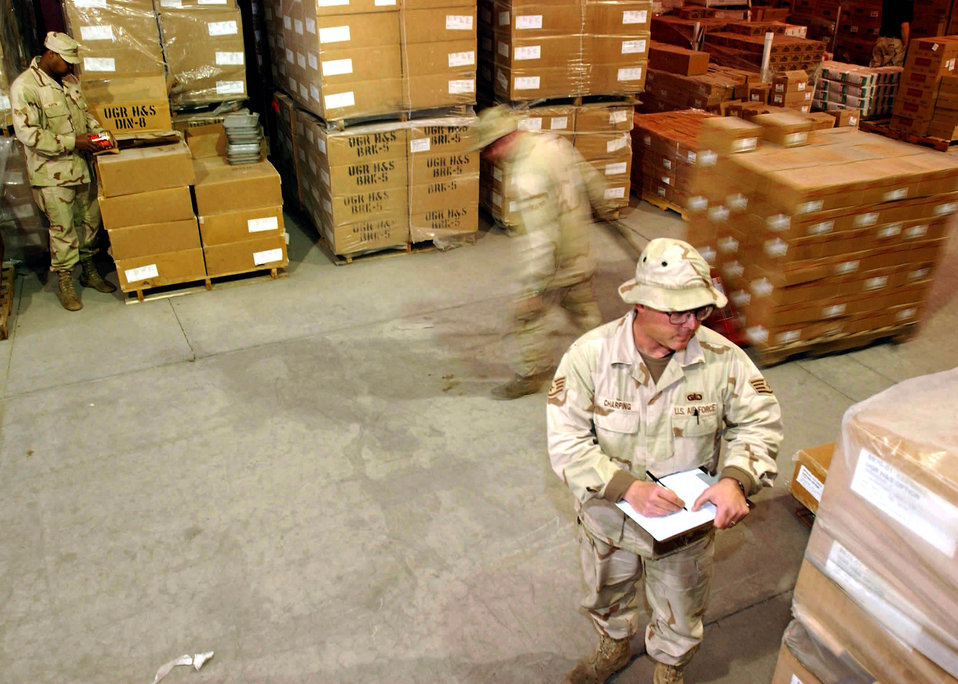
Supply chain

OPERATION ENDURING FREEDOM (AFPN) -- Staff Sgt. Ed Charping inventories food supplies arriving at the 376th Expeditionary Services Squadron storage facility at Ganci Air Base, Kyrgyzstan. Meanwhile, storeroom clerks Senior Airman Jamari Austin (left) and Airman 1st Class Alex Hart help move supplies. The facility holds enough supplies for squadron airmen to serve 50,000 to 60,000 meals here each month.